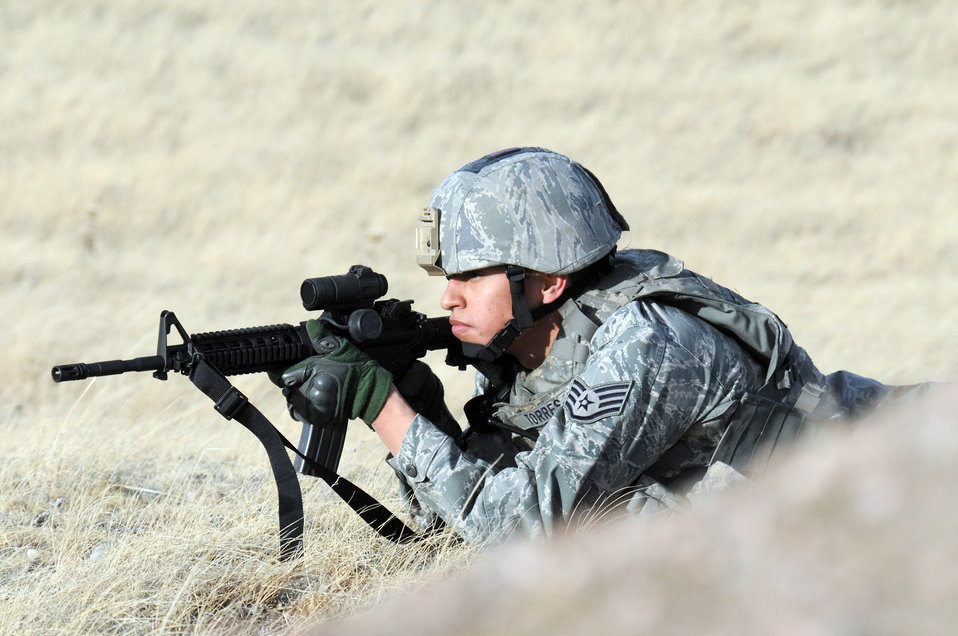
Security forces exercise

Staff Sgt. Renaldo Torres takes aim during an exercise Jan. 13, 2011, at F.E. Warren Air Force Base, Wyo. Sergeant Torres is assigned to the 790th Missile Security Forces Squadron.